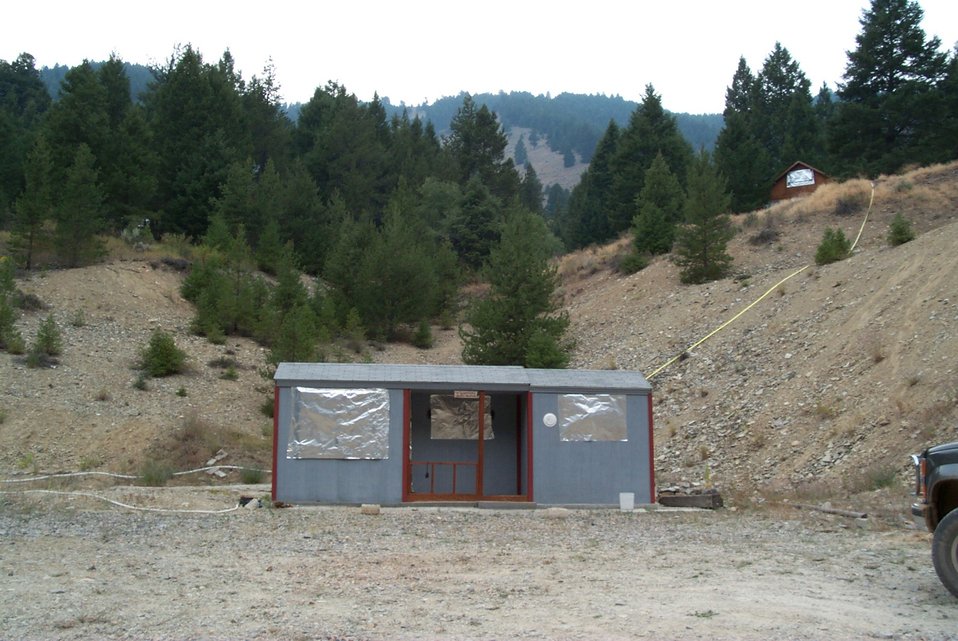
Fire retardant measures Urban interface Fire Clearwater Fire Salmon Field Office USRD Upper Snake River District